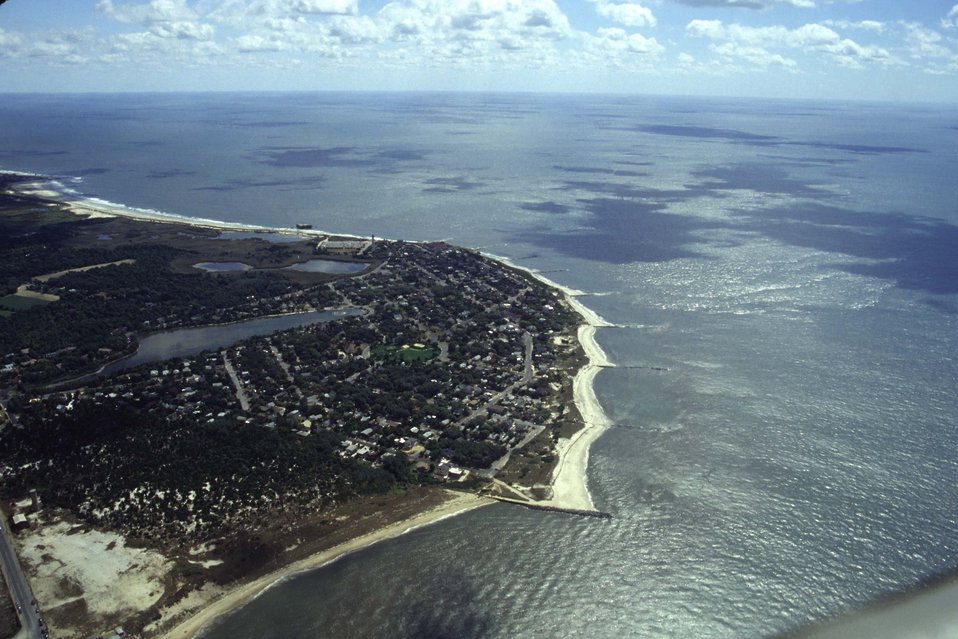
Cape May Point, NJ